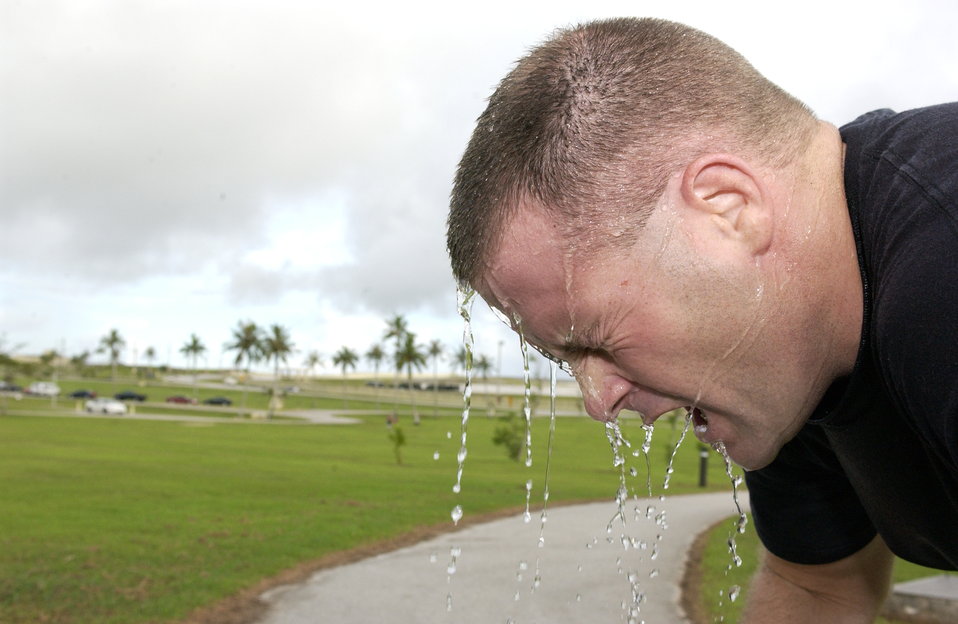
Water break

ANDERSEN AIR FORCE BASE, Guam -- First Lieutenant Keith Quick takes a break after completing a 1.5-mile run during the Team Andersen Warrior Challenge. The competition is a quarterly moral and readiness building event where participants compete in an obstacle course, knowledge bowl and a 1.5-mile run. Lieutenant Quick is assigned to the 36th Security Forces Squadron.